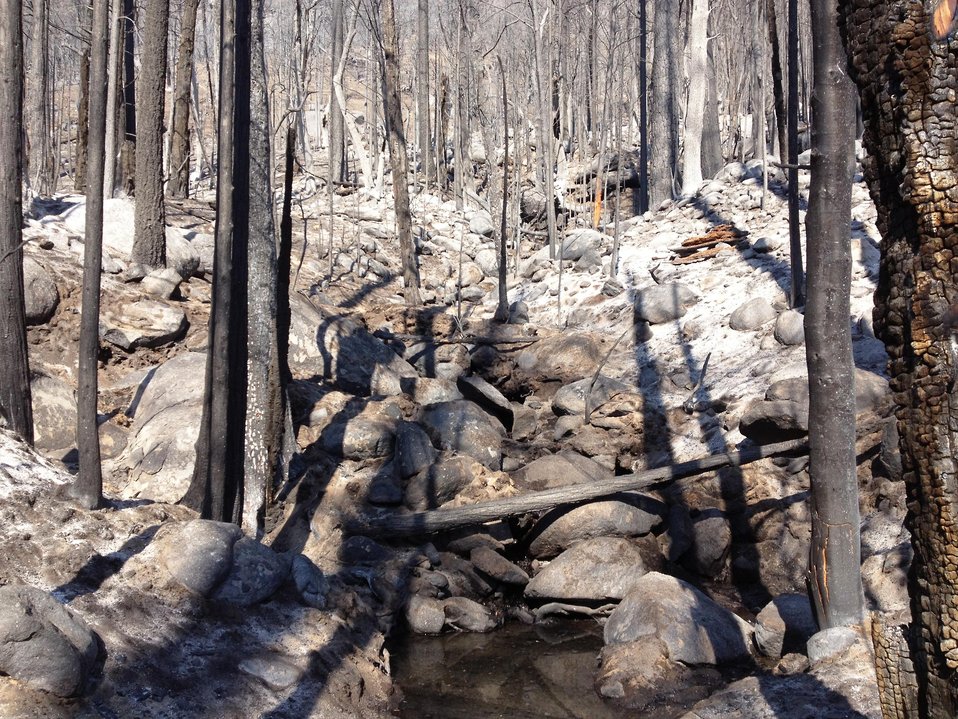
The Granite Creek Drainage area has suffered high severity burn damage from the Rim Fire. Burned Area Emergency Response (BAER) is a rapid assessment of burned watersheds by a BAER team to identify imminent post-wildfire threats to human life and safety property and critical natural or cultural resources on National Forest System lands and take immediate actions to implement emergency stabilization measures before the first major storms. Fires result in loss of vegetation exposure of soil to erosion and increased water runoff that may lead to flooding increased sediment debris flows and damage to critical natural and cultural resources. BAER team members implement seeding and mulching installation to prevent erosion, erect temporary water run-off control structures that will protect recovering areas, and installation of warning signs, replace safety related facilities, remove safety hazards, prevent permanent loss of habitat for threatened and endangered species, and prevent the spread of noxious weeds and protect critical cultural resources. The Rim Fire in the Stanislaus National Forest near in California began on Aug. 17, 2013 and is under investigation. The fire has consumed approximately 256,169 acres and is 84% contained.